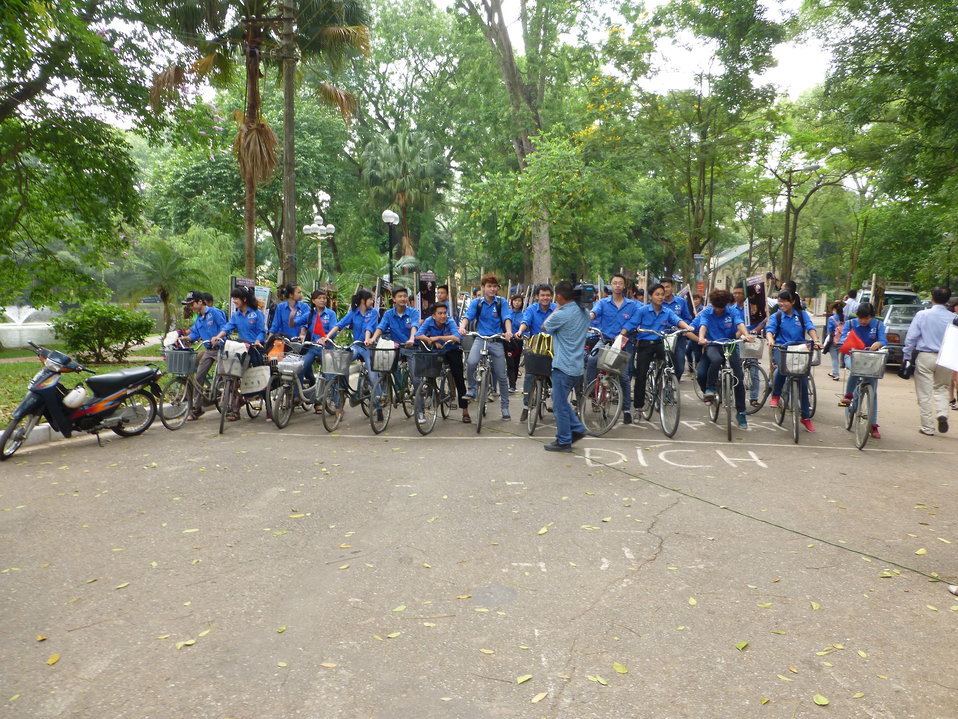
USAID Supports International Day for Biological Diversity in Hanoi